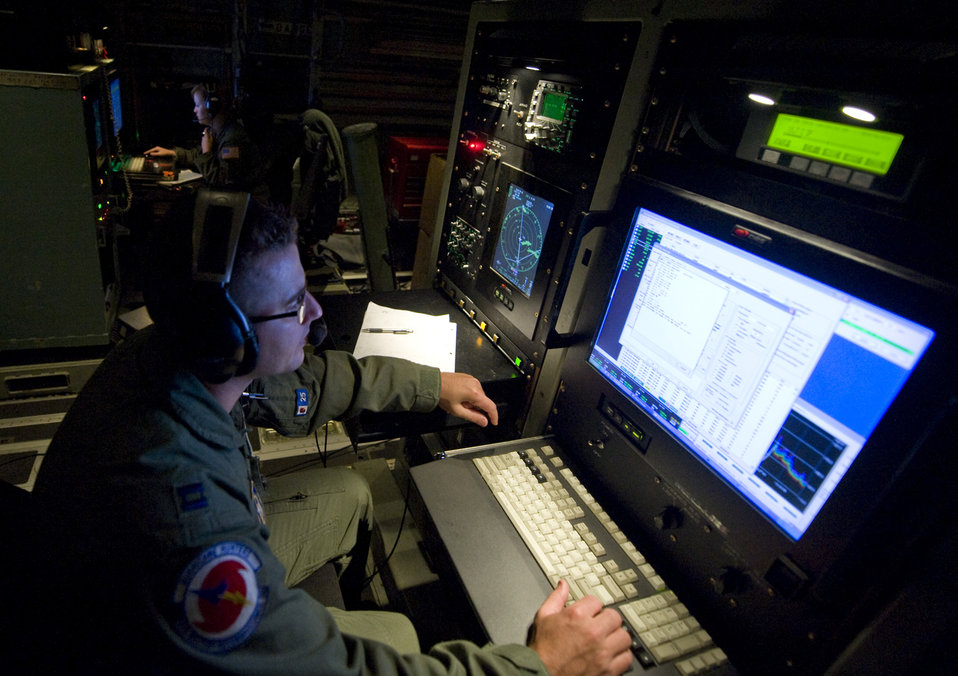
Hurricane Hunter

On board a WC-130J Hercules aircraft, Hurricane Hunters Capt. Douglas Gautrau, foreground, an air reconnaissance weather officer, and Senior Airman Jenna Daniel, a weather reconnaissance loadmaster, collect weather information about Hurricane Alex June 29, 2010. Both are assigned to the 53rd Weather Reconnaissance Squadron at Keesler Air Force Base, Miss.